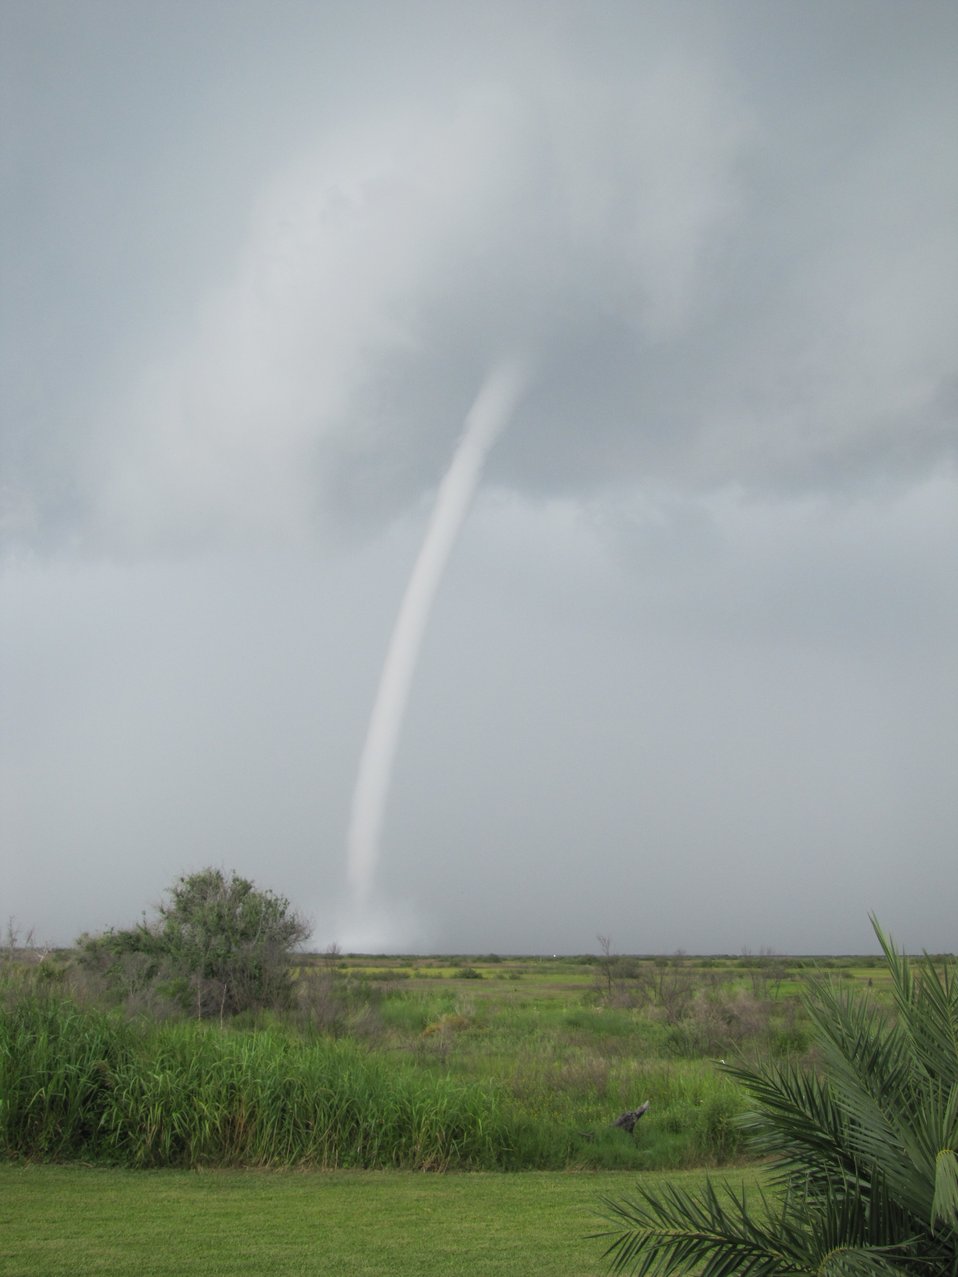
A spectacular series of images of waterspouts off the Port of Grand Isle.